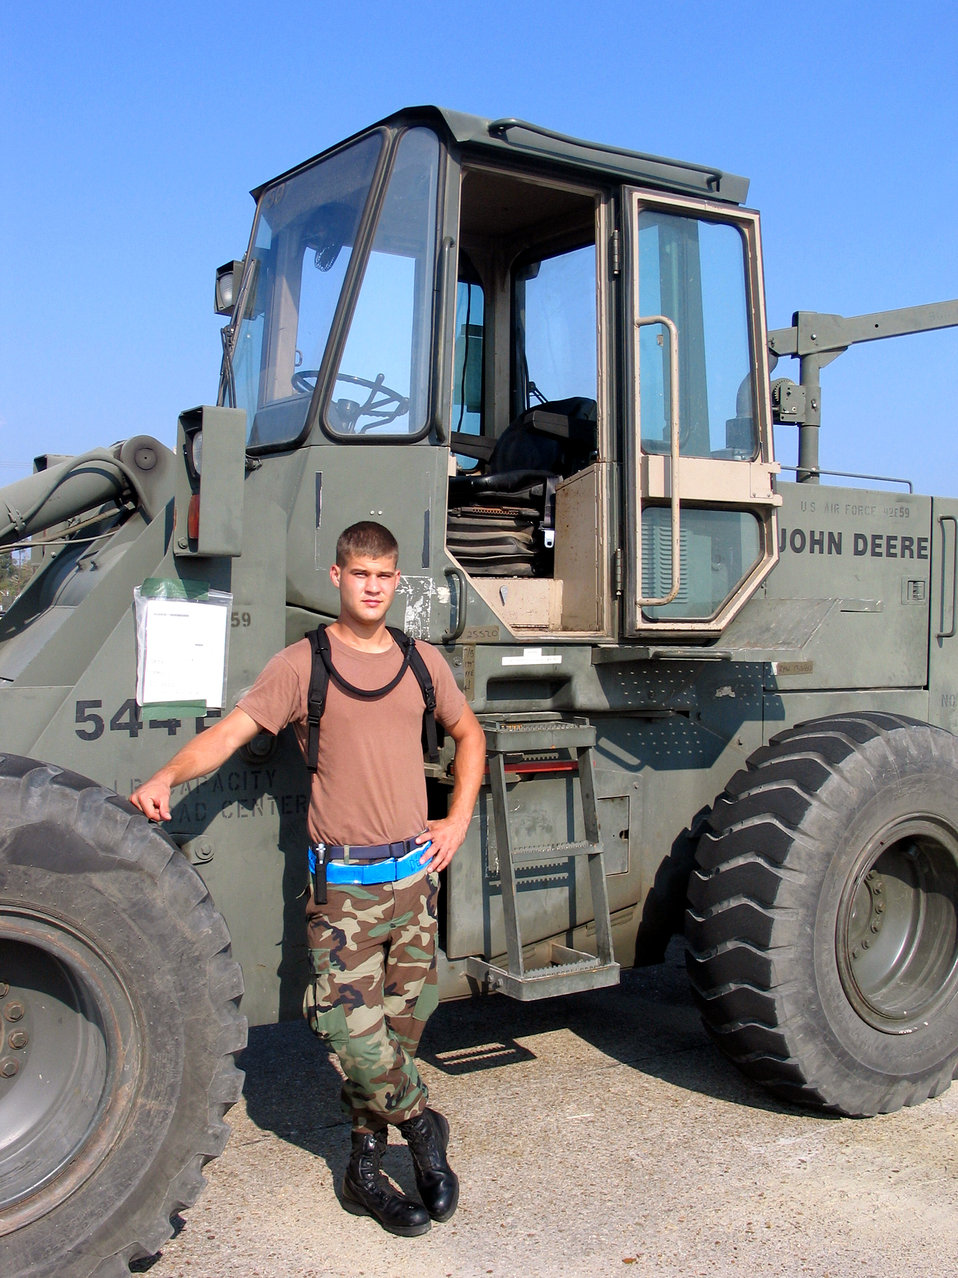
First deployment a real eye-opener

NEW ORLEANS -- Airman 1st Class Brandon Calderon stands beside a 10K all-terrain forklift that he used here to unload supplies in support of Hurricane Katrina relief. He is from the 60th Aerial Port Squadron at Travis Air Force Base, Calif.